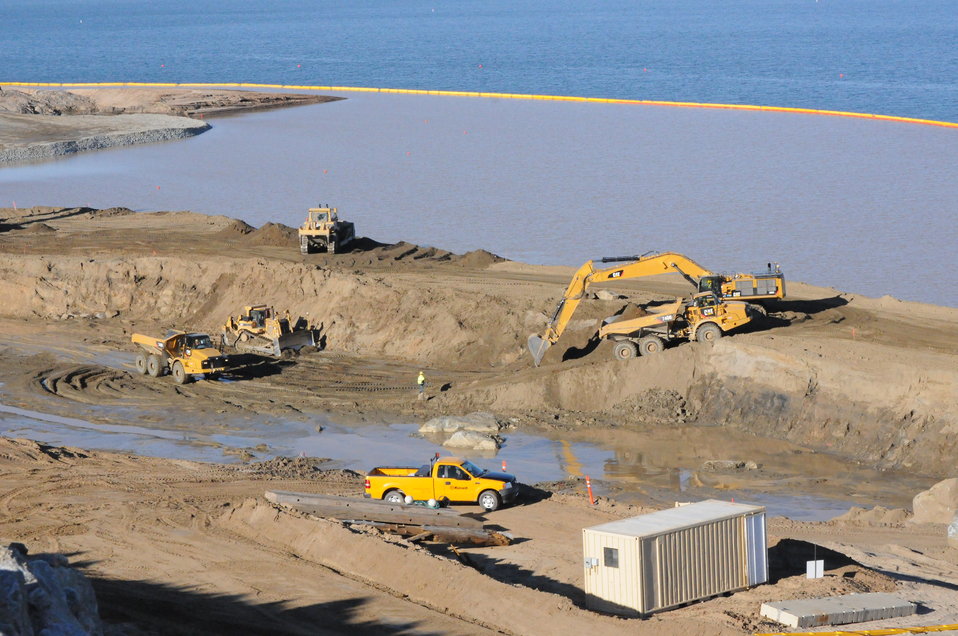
Auxiliary Spillway progress surges forward

Construction crews excavate rock and dirt material from Folsom Lake as work continues on the new auxiliary spillway. This work was originally expected to take place during a later phase of the project underwater, which takes longer and is more expensive. Overall, this means that the contractor has more schedule flexibility to meet the expected project completion date of Oct. 2017.